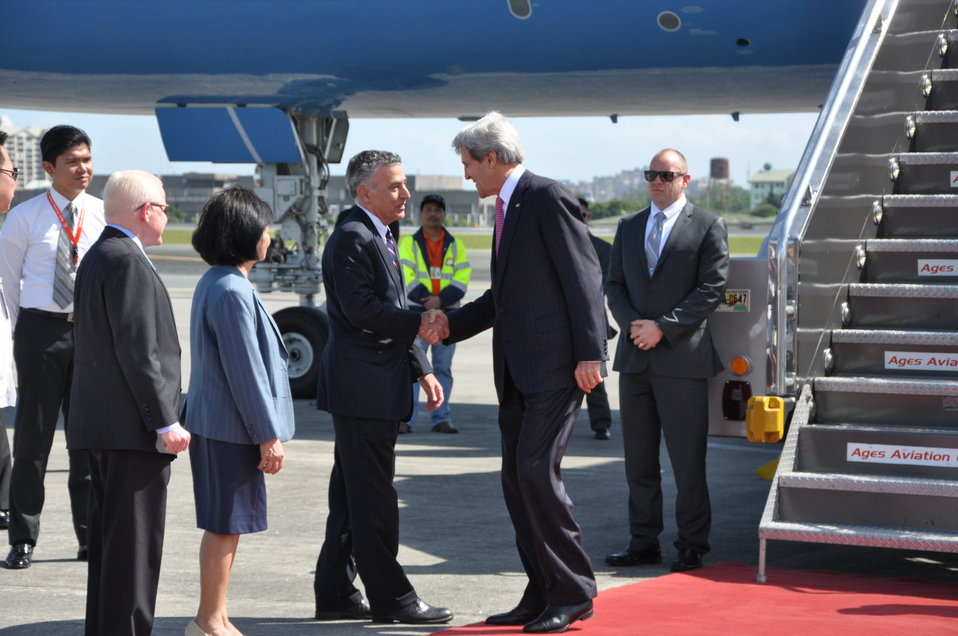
Ambassador Goldberg Welcomes Secretary Kerry to the Philippines

U.S. Ambassador to the Philippines Philip S. Goldberg welcomes U.S. Secretary of State John Kerry to Manila, Philippines, for his two-day visit on December 17, 2013. Also pictured are Philippine Ambassador to the U.S. Jose L. Cuisia and Philippine Undersecretary of Foreign Affairs in International Economic Relations Laura Quiambao-Del Rosario.